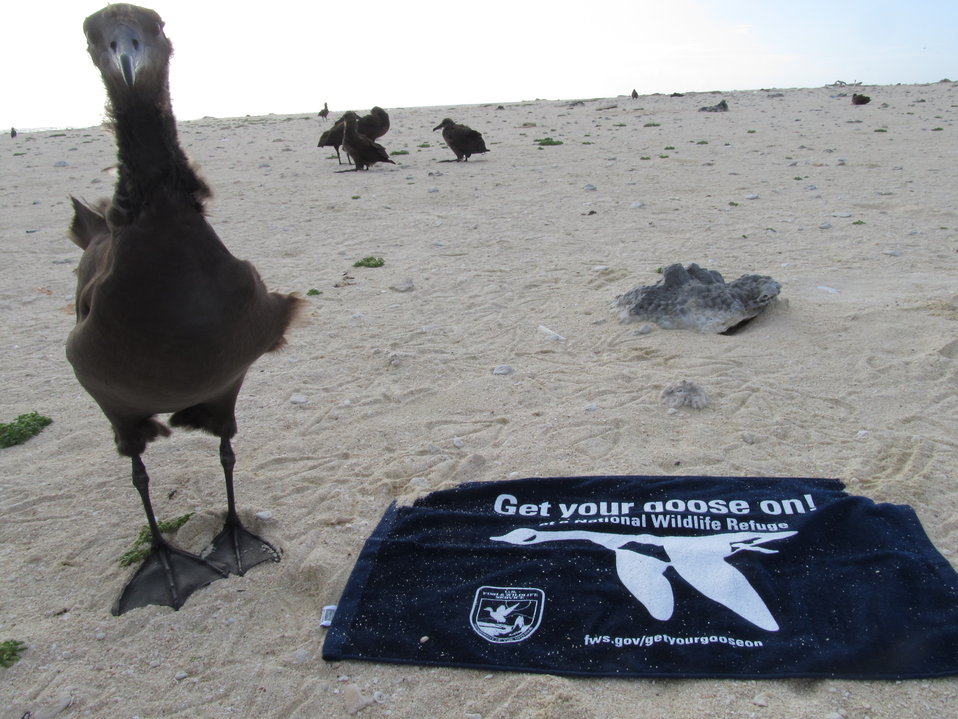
Get Your Goose On! - Albatross Style

Photo taken at Laysan Island in the Papahanaumokuakea Marine National Monument, Hawaiian Islands National Wildlife Refuge. Laysan is located approximately 800 miles northwest of Honolulu, Hawaii and is a remote field camp staffed year round for habitat restoration and population monitoring.